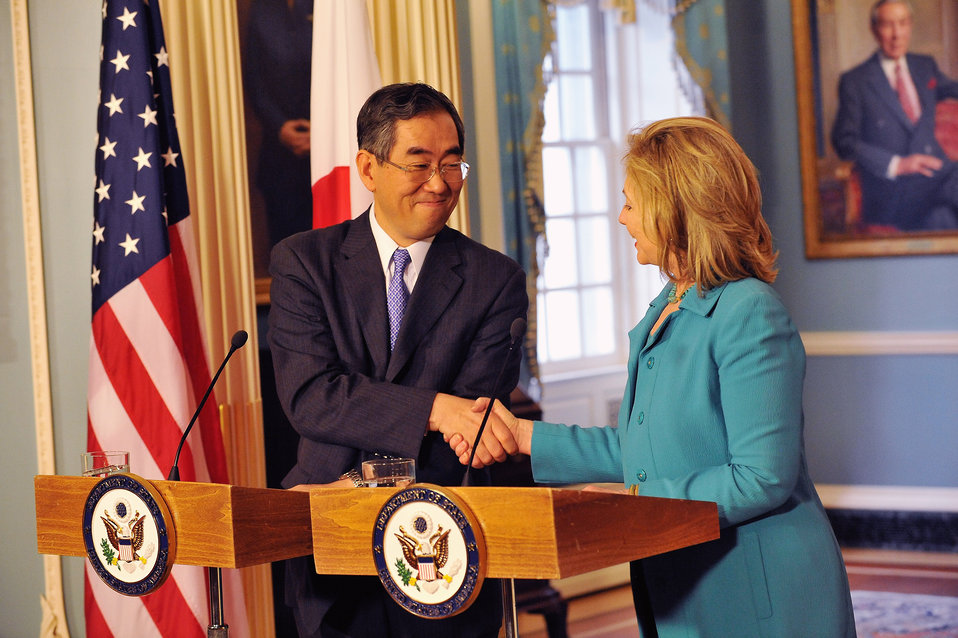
Secretary Clinton Shakes Hands With Japanese Foreign Minister Matsumoto

U.S. Secretary of State Hillary Rodham Clinton shakes hands with Japanese Foreign Minister Takeaki Matsumoto after their bilateral meeting, at the U.S. Department of State in Washington, D.C., on April 29, 2011.